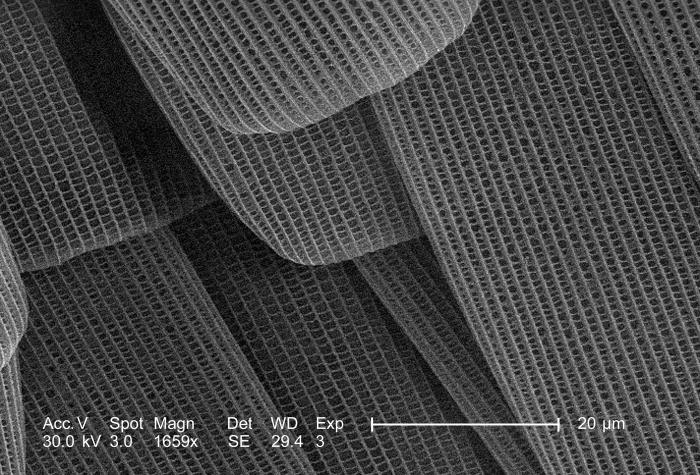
Magnified 1659x, this scanning electron micrograph (SEM) depicted a highly magnified view of the flying wing surface of an unidentified insect. The organism was discovered on the grounds of the Decatur, Georgia suburbs. The scalar structures, though numerous, were very light, thereby, adding very little to the wing's overall weight. These scales not only added colorful demarcating characteristics to the wings, which both distinguished this specie from another, but facilitated sexual differentiation. They also acted as thermoregulatory control mechanisms, thereby, insulating the insect on colder days, and dissipating excess heat on warmer days.